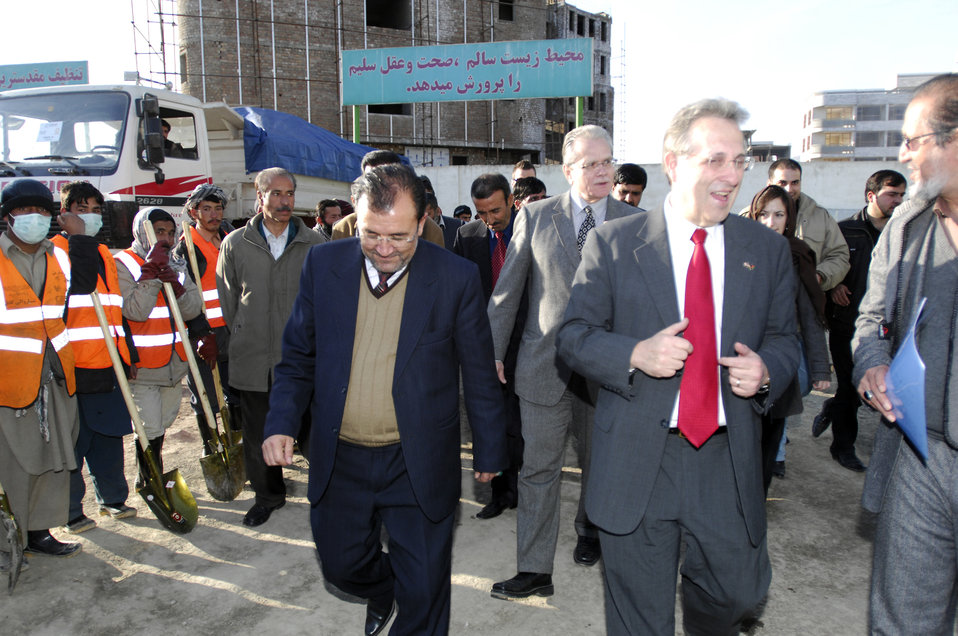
Care39